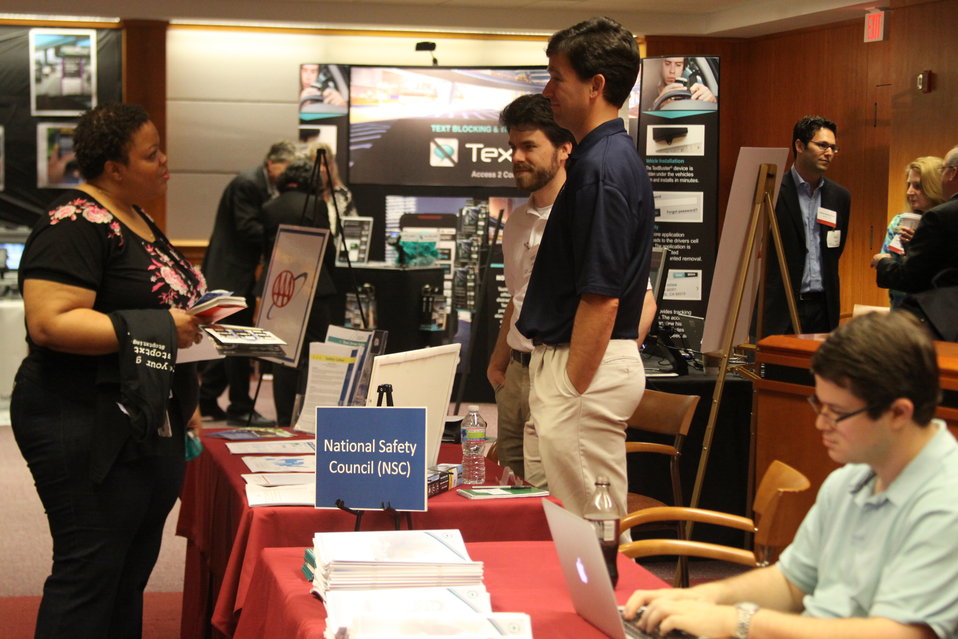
Distracted Driving Technology Showcase April 19, 2013